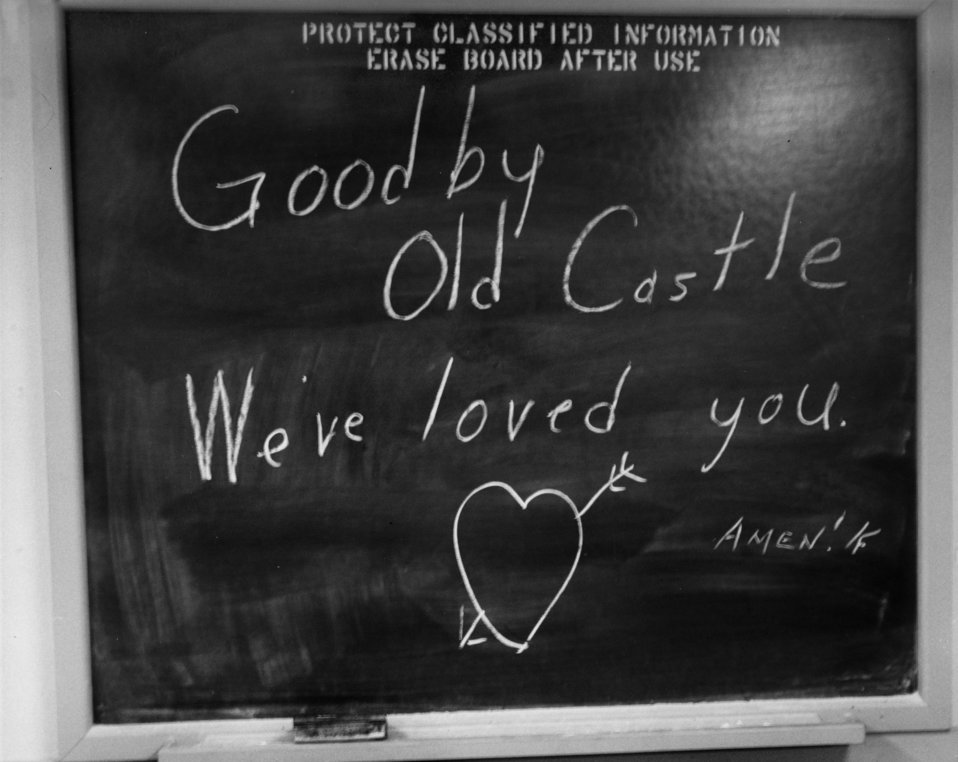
Blackboard AEC Adm. Bldg. Oak Ridge

70-186 DOE photo Frank Hoffman 7/1970 Oak Ridge Tennessee